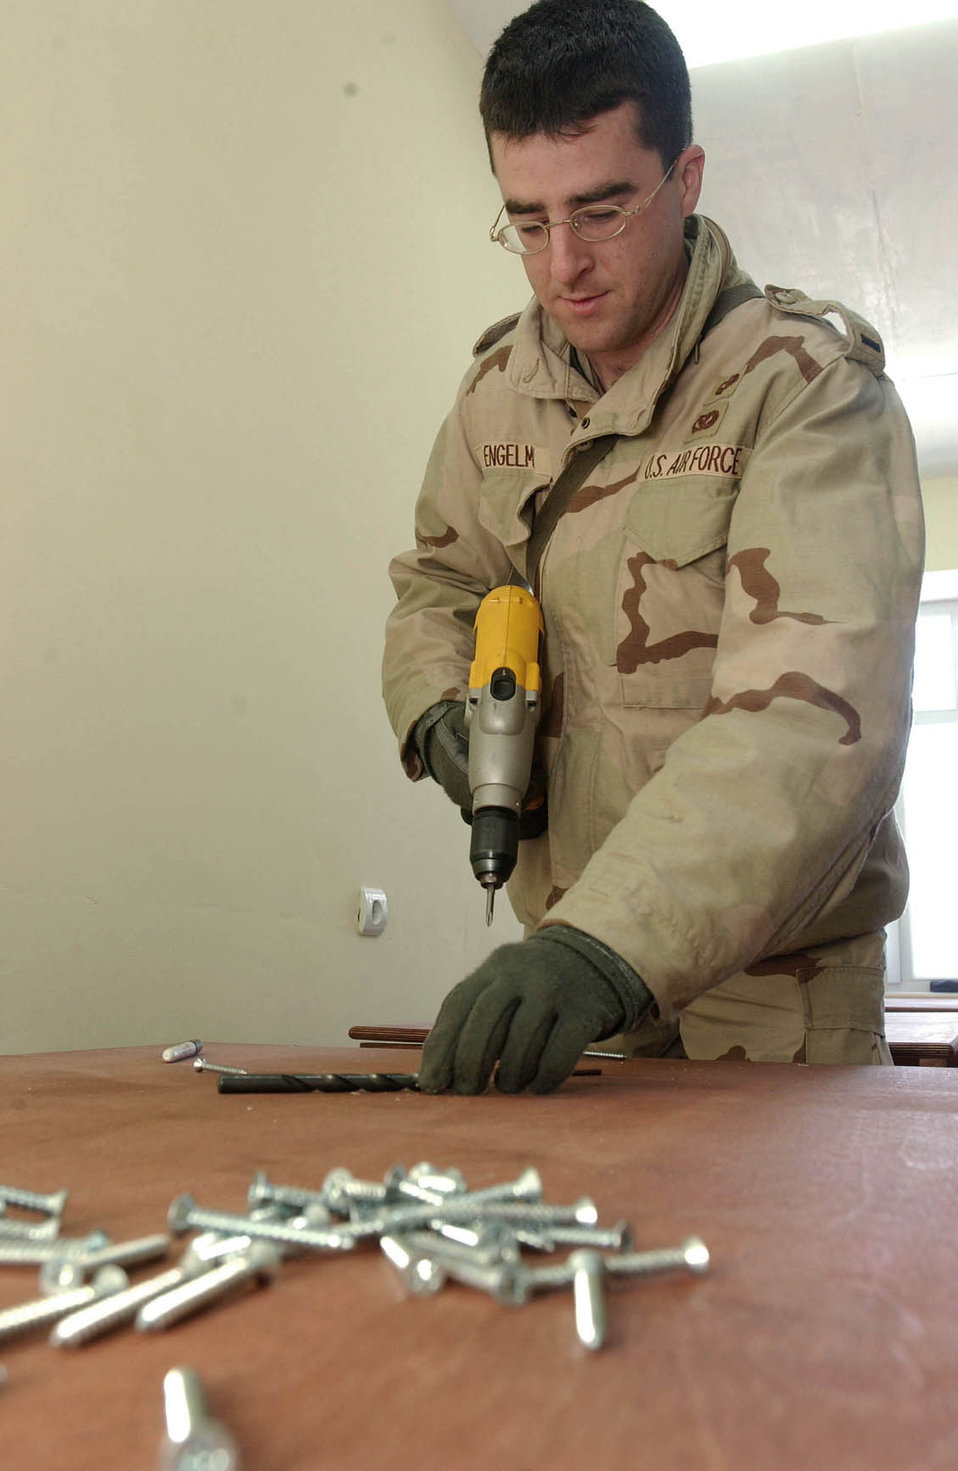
Back to school

OPERATION ENDURING FREEDOM (AFPN) -- First Lt. Richard Engelman screws the top of a desk to its leg at a local school. He is assigned to the 376th Expeditionary Civil Engineer Squadron at Ganci Air Base, Kyrgyzstan. Airmen and local contractors are working together to refurbish the school in nearby Marble Village.